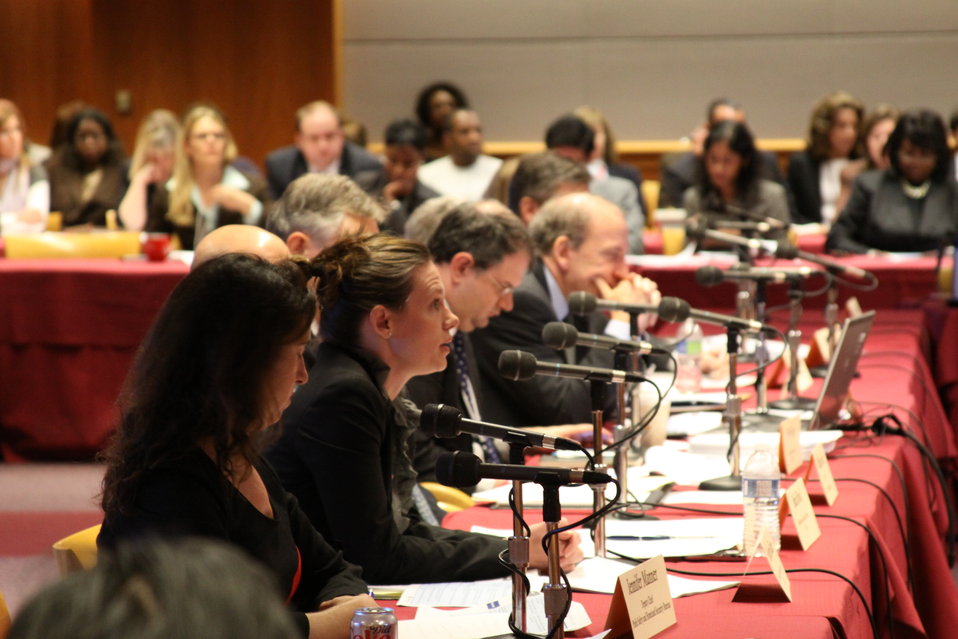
December Commission Meeting